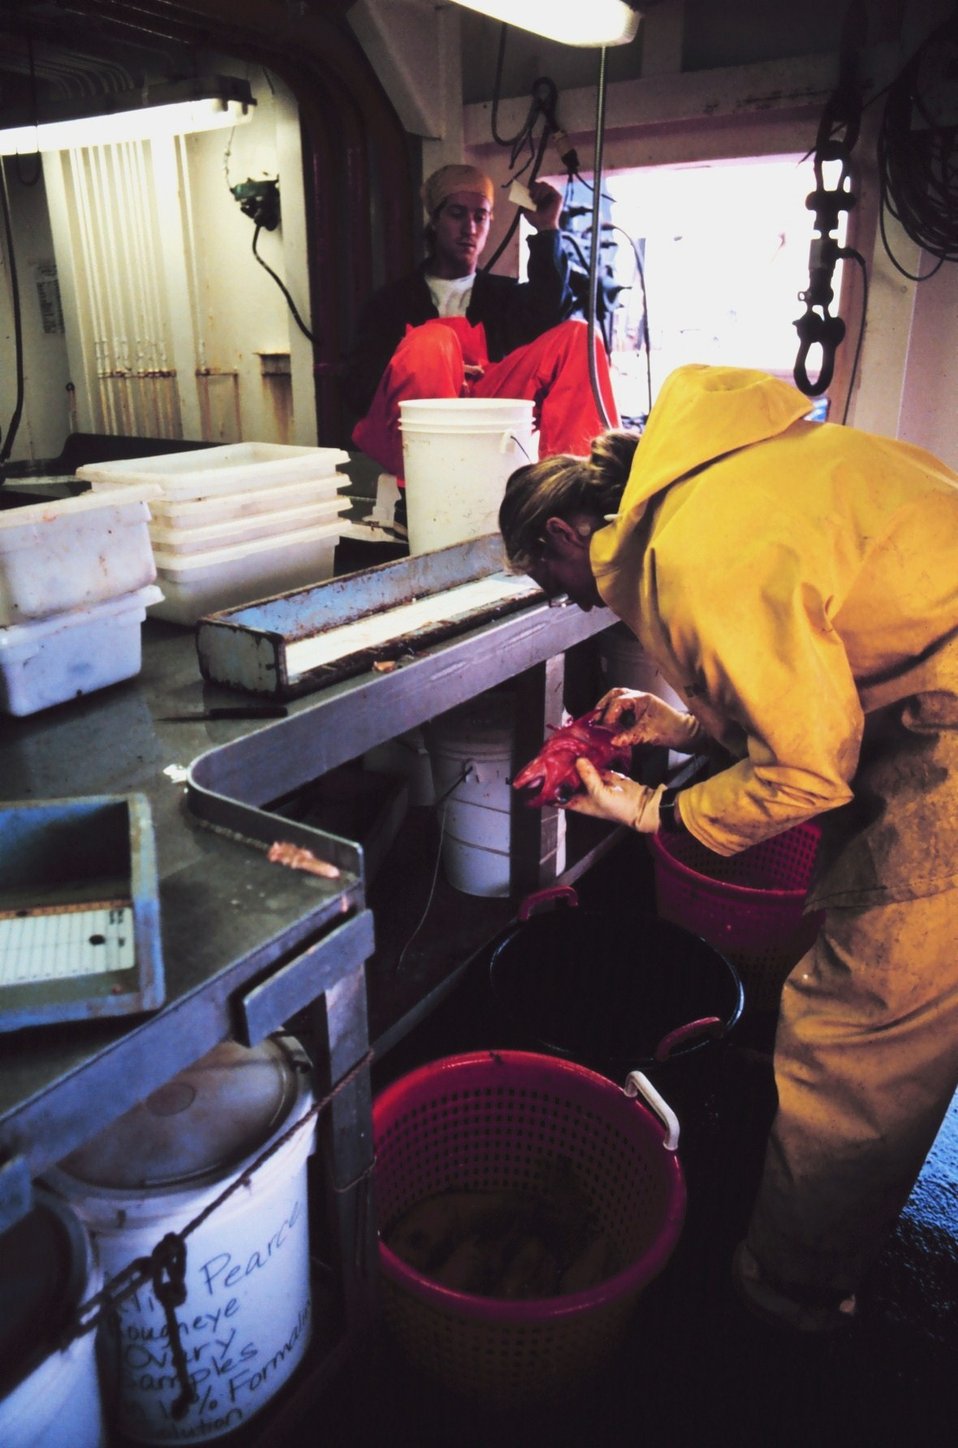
Scientist weighing and measuring fish on the MILLER FREEMAN